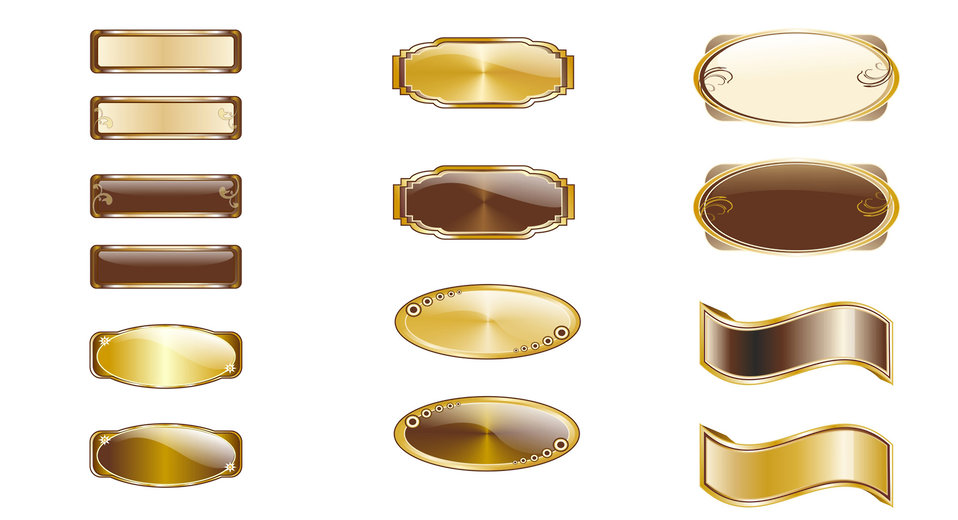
Buttons for website

Vector gold buttons for website design. to cut out the white background..